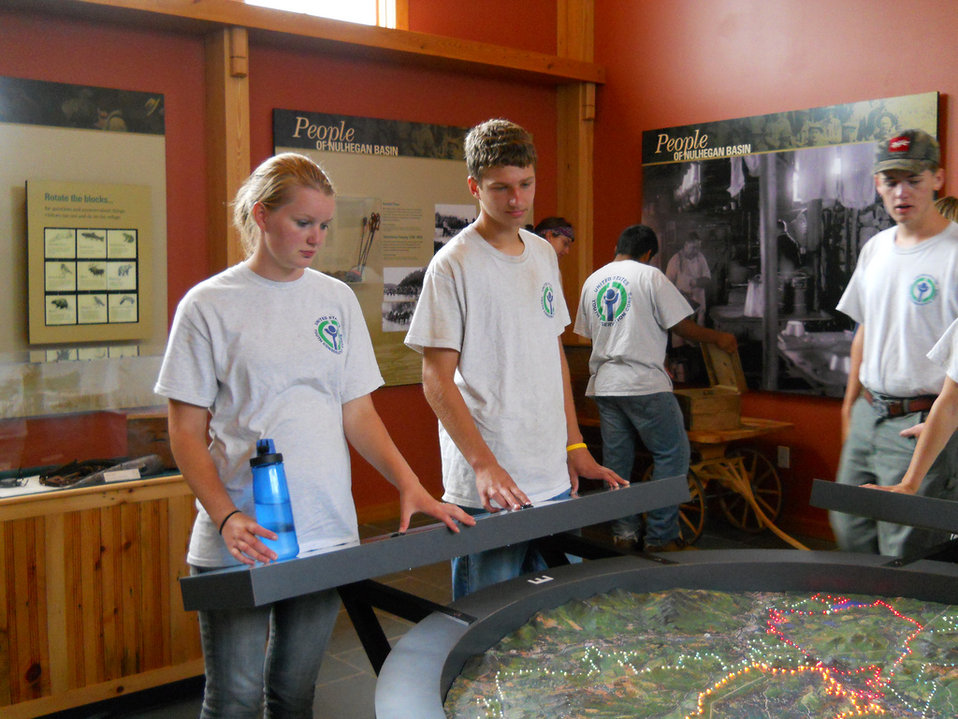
Envronmental Education at Great Falls Discovery Center

U.S. Fish and Wildlife Service